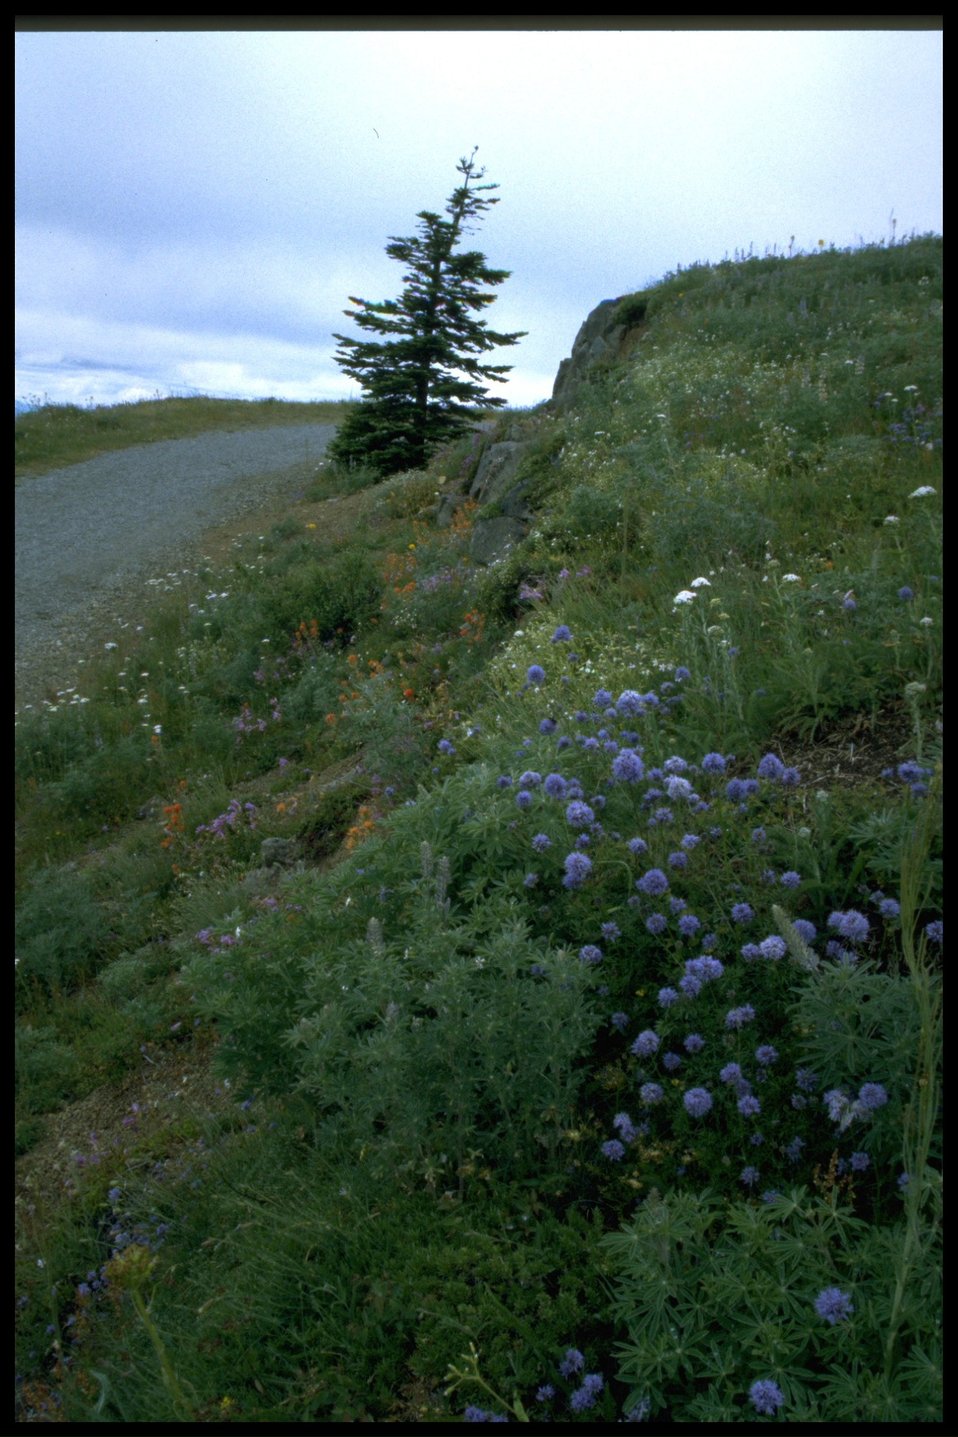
Farshot of blue-field gilia, Gilia capitata.